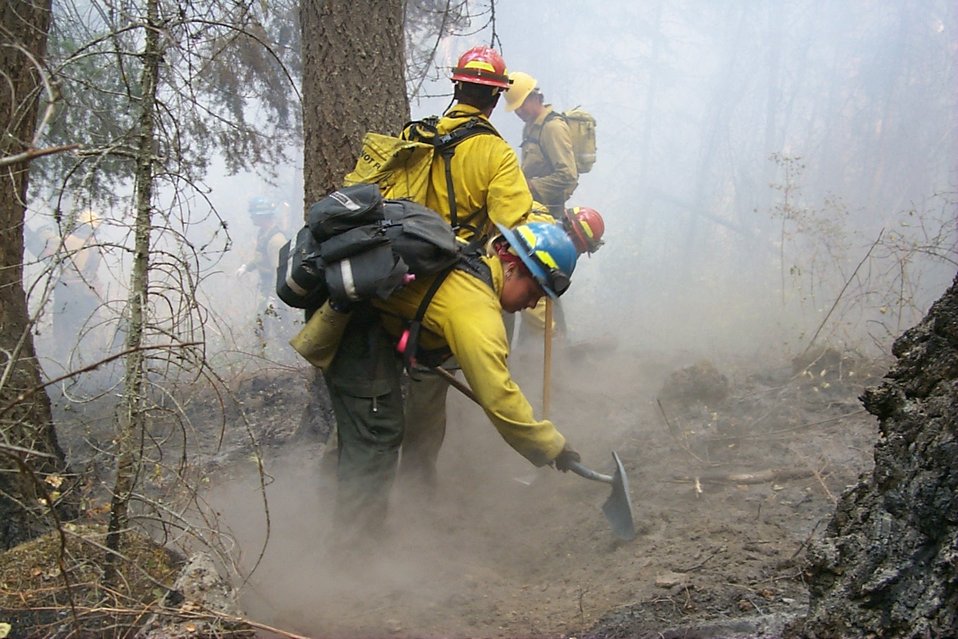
Line crew Fire Clearwater Fire Salmon Field Office USRD Upper Snake River District